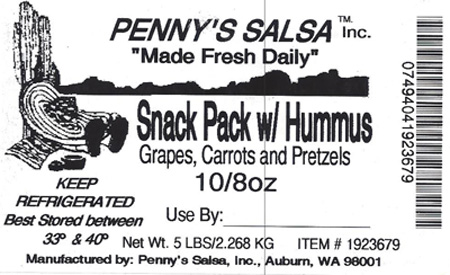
RECALLED – Hummus

July 16, 2013 – Product Recall – Hagee Foods Inc. dba Penny's Salsa Inc. Recalls Hummus Products Because of Possible Health Risk.